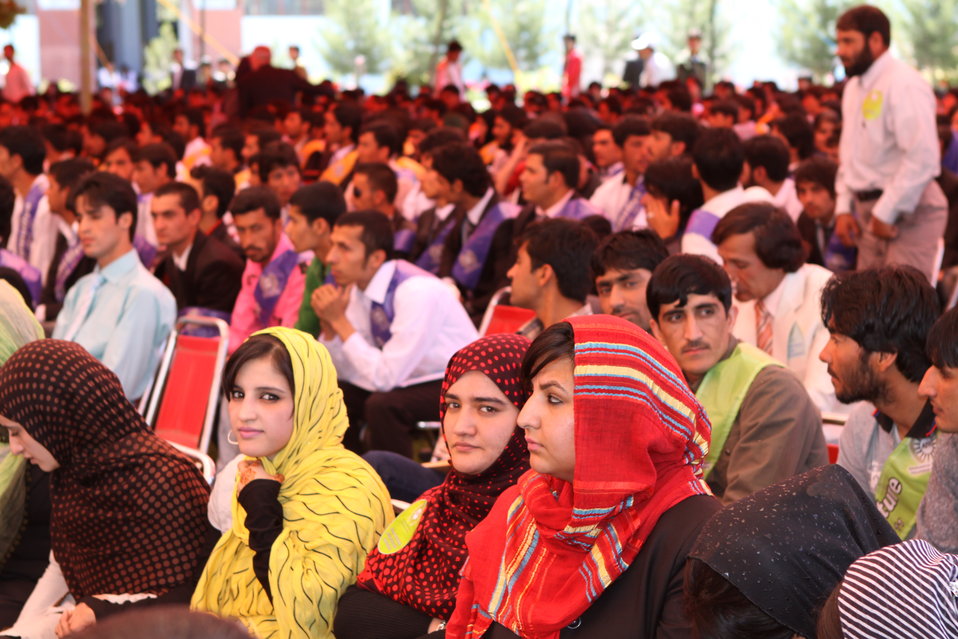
100522 ATVI Graduation 039